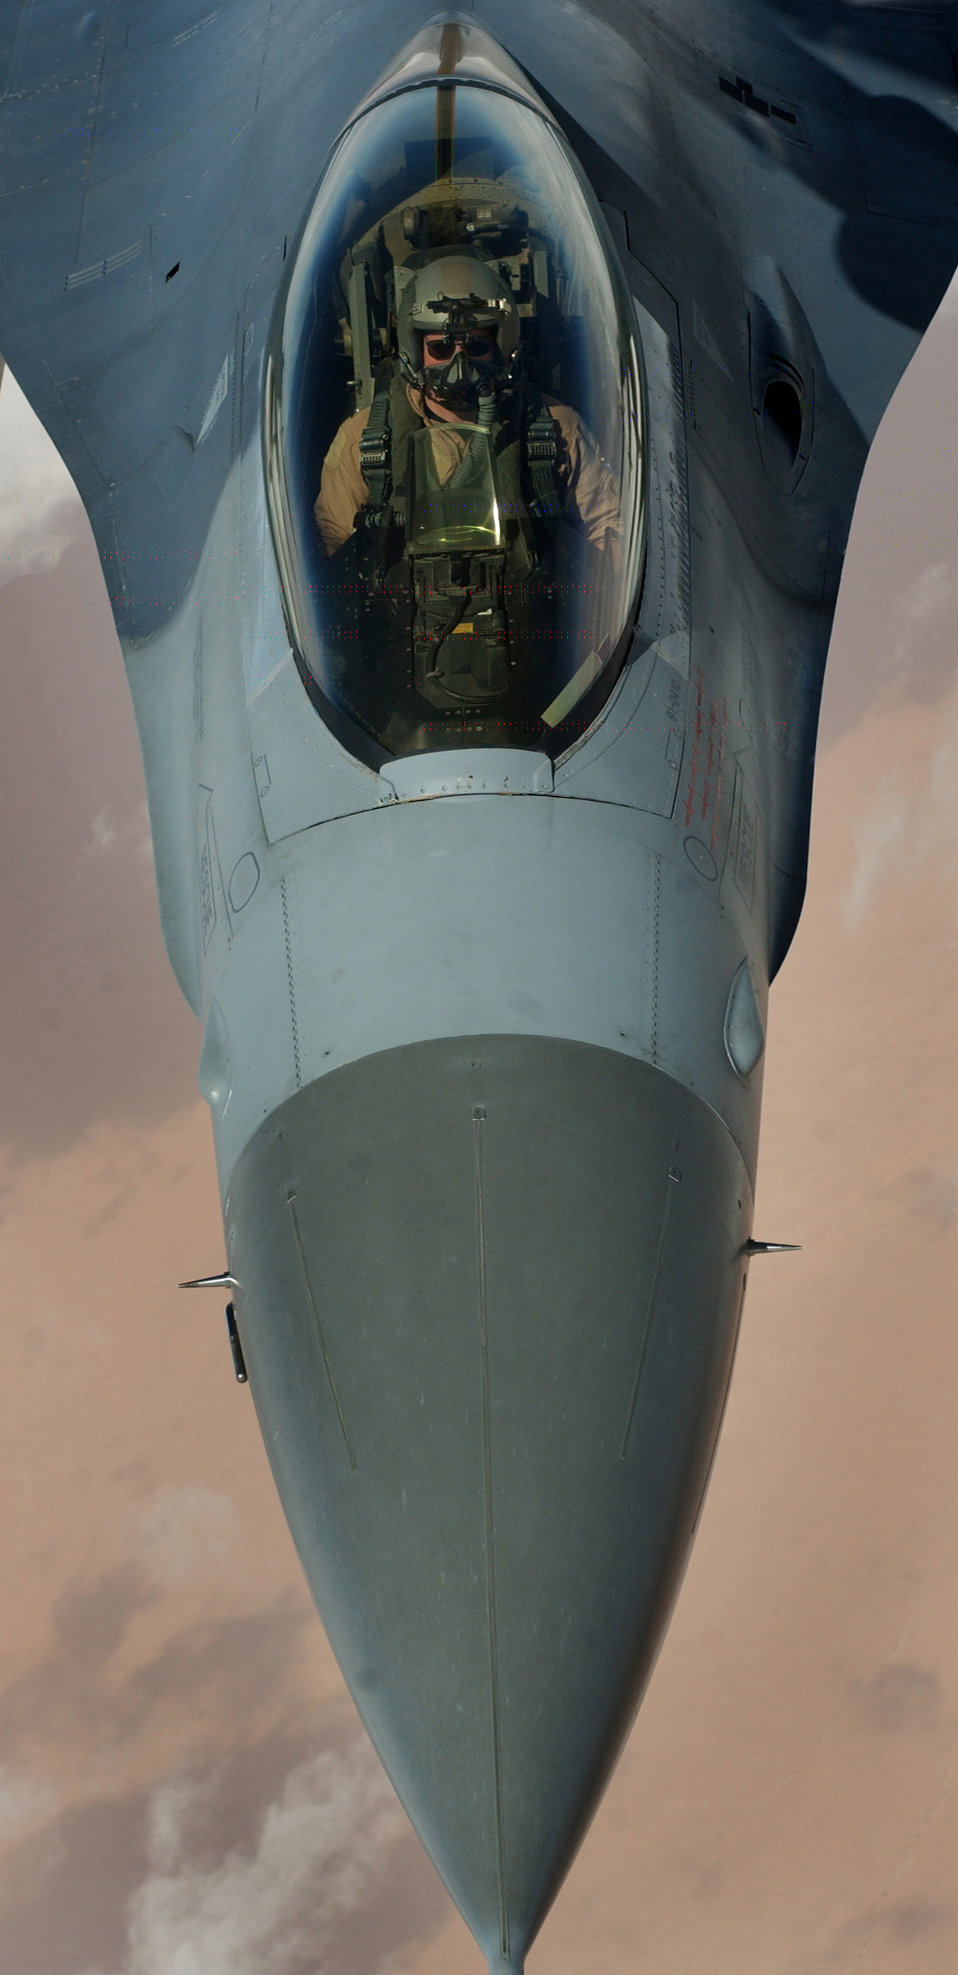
Falcon driver

OPERATION IRAQI FREEDOM -- An F-16 Fighting Falcon from the 52nd Fighter Wing, Spangdahlem Air Base, Germany, receives fuel from a KC-135 Stratotanker from McConnell Air Force Base, Kan., in the skies near Iraq on March 22, 2003. The F-16s are flying a mission over Iraq in support of Operation Iraqi Freedom.